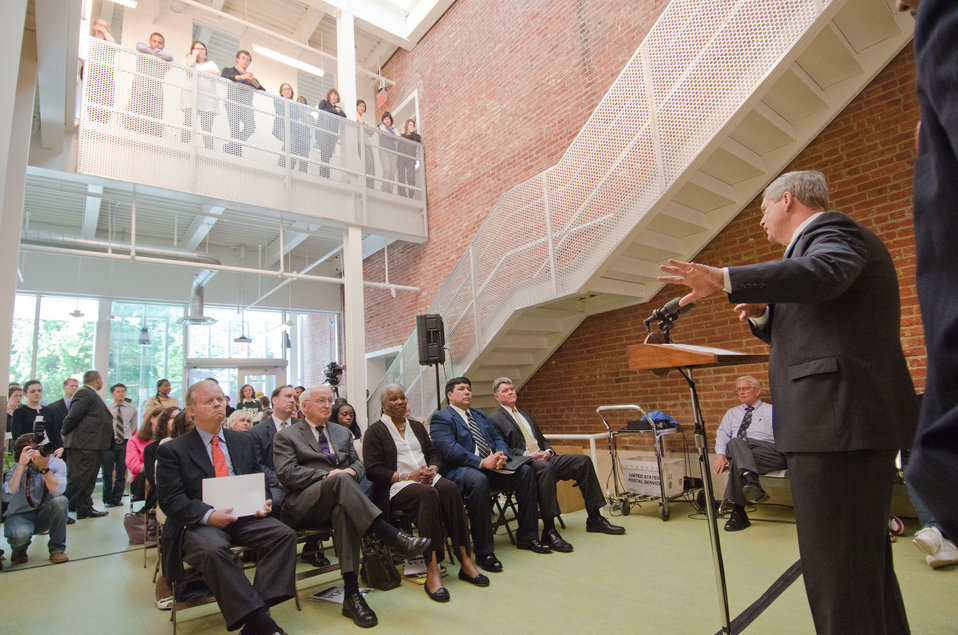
Agriculture Secretary Tom Vilsack announced on Thursday April 29, 20ll in Washington, DC, a commitment to ending childhood hunger. Secretary Vilsack presented USDA's resources to champion the end of hunger and create innovative partnerships to address hunger, especially among children. Vilsack announced that USDA has made available to individuals, groups and communities the tools and technical assistants to become champions themselves in ending childhood hunger. He shared the web address www.fns.usda.gov/ech, where people can participate in an online commitment for that cause and identified actions that can be taken. When a person registers as a Stakeholder, they, their group or community can be kept informed and have input about ending childhood hunger. A follow-on link to www.serve.gov can assist a person in finding volunteer opportunities in their area; register an unlisted program; share a story about a volunteer project or personal experience; and help get the word out about United We Serve.